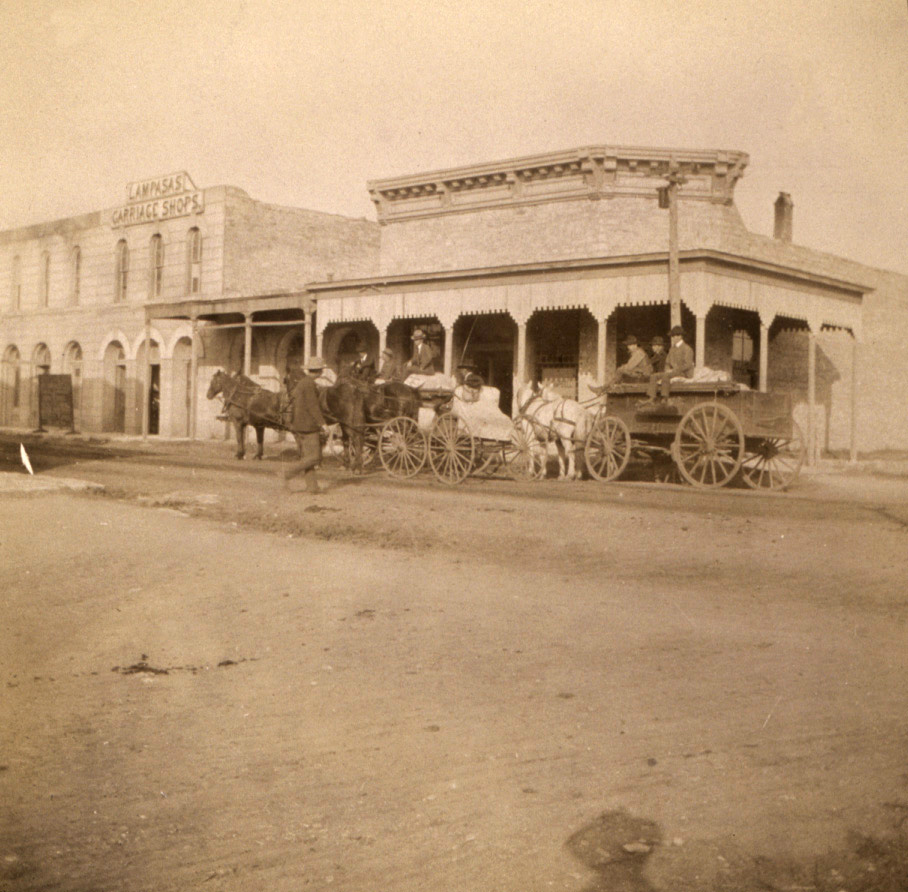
Building party leaving Lampasas, Texas. J.S. Bilby in light buggy.